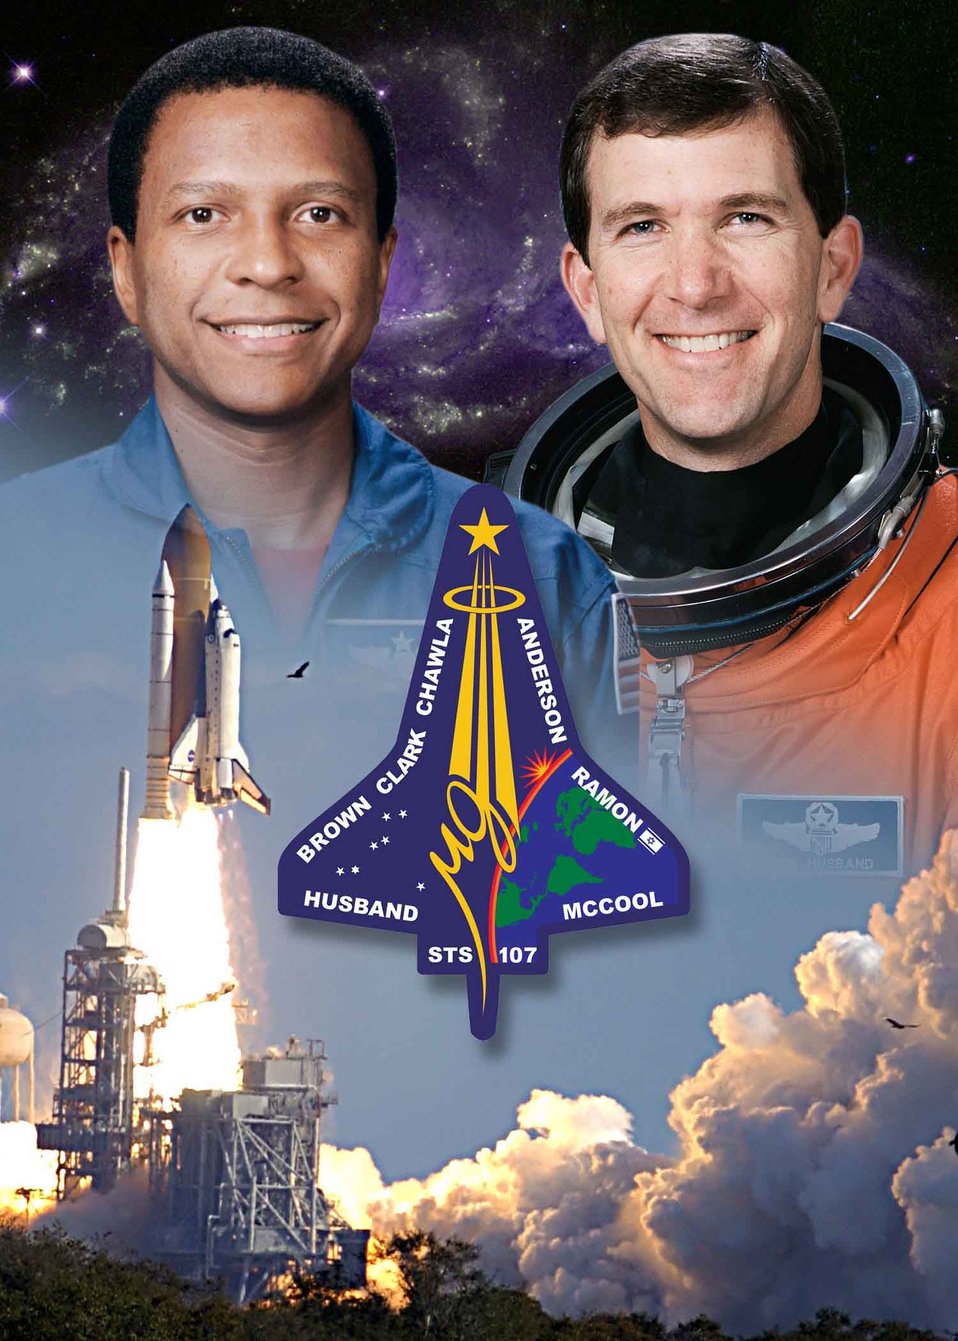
Secretary, Chief send Columbia message

WASHINGTON -- Space Shuttle Columbia astronauts Lt. Col. Michael Anderson (left) and Col. Rick Husband are eulogized in a joint message by the secretary of the Air Force and the Air Force chief of staff.